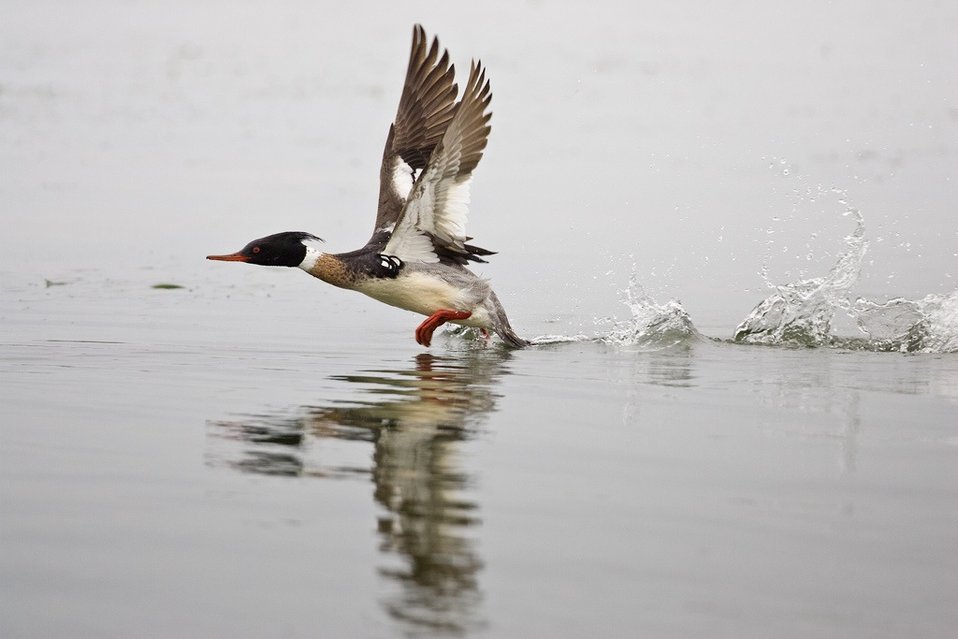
red-breasted merganser takes flight

A male red-breasted merganser in breeding plumage
San Diego Bay National Wildlife Refuge, CA